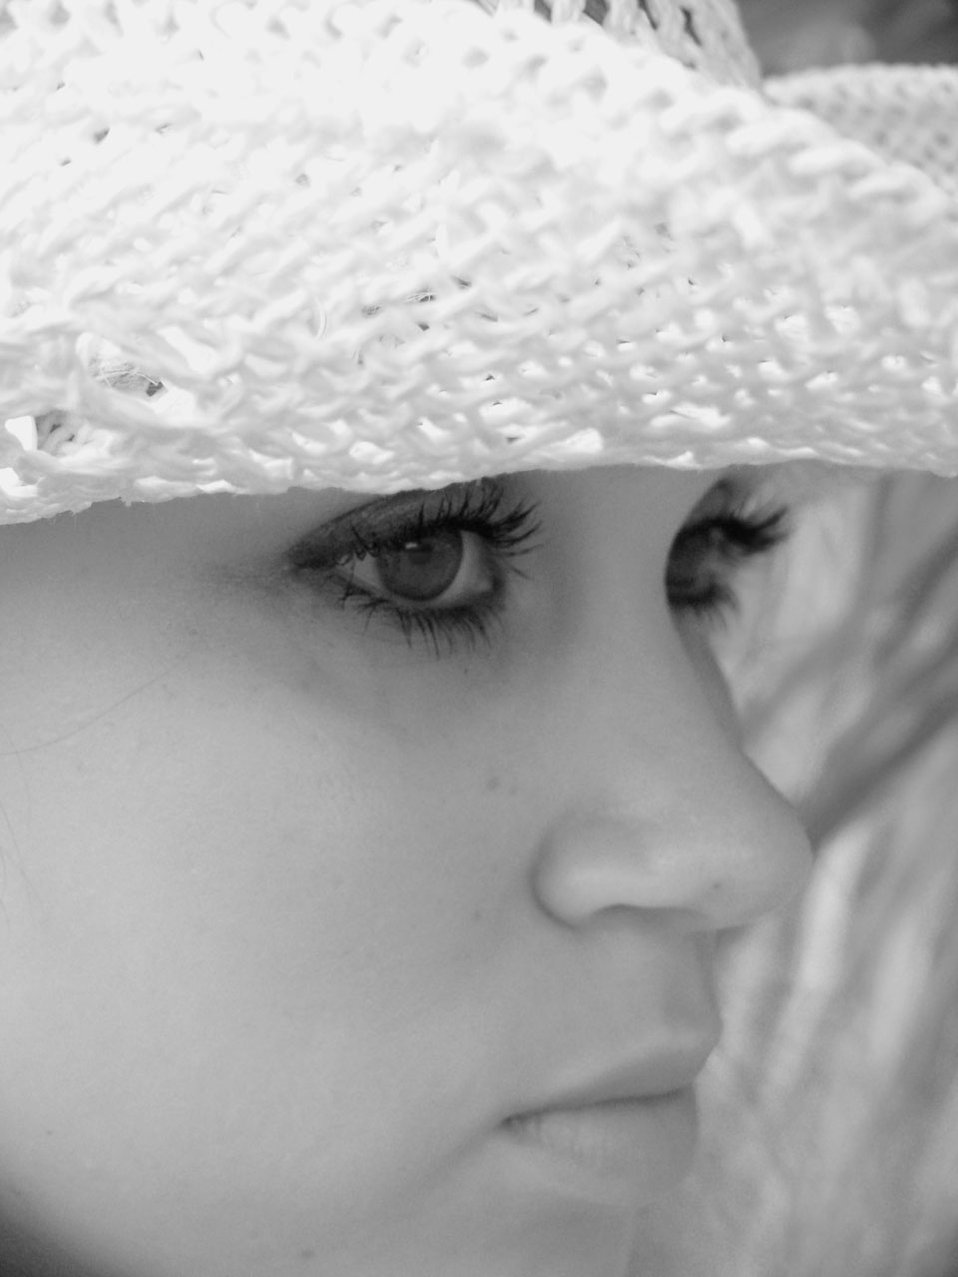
Girl black and white photo.